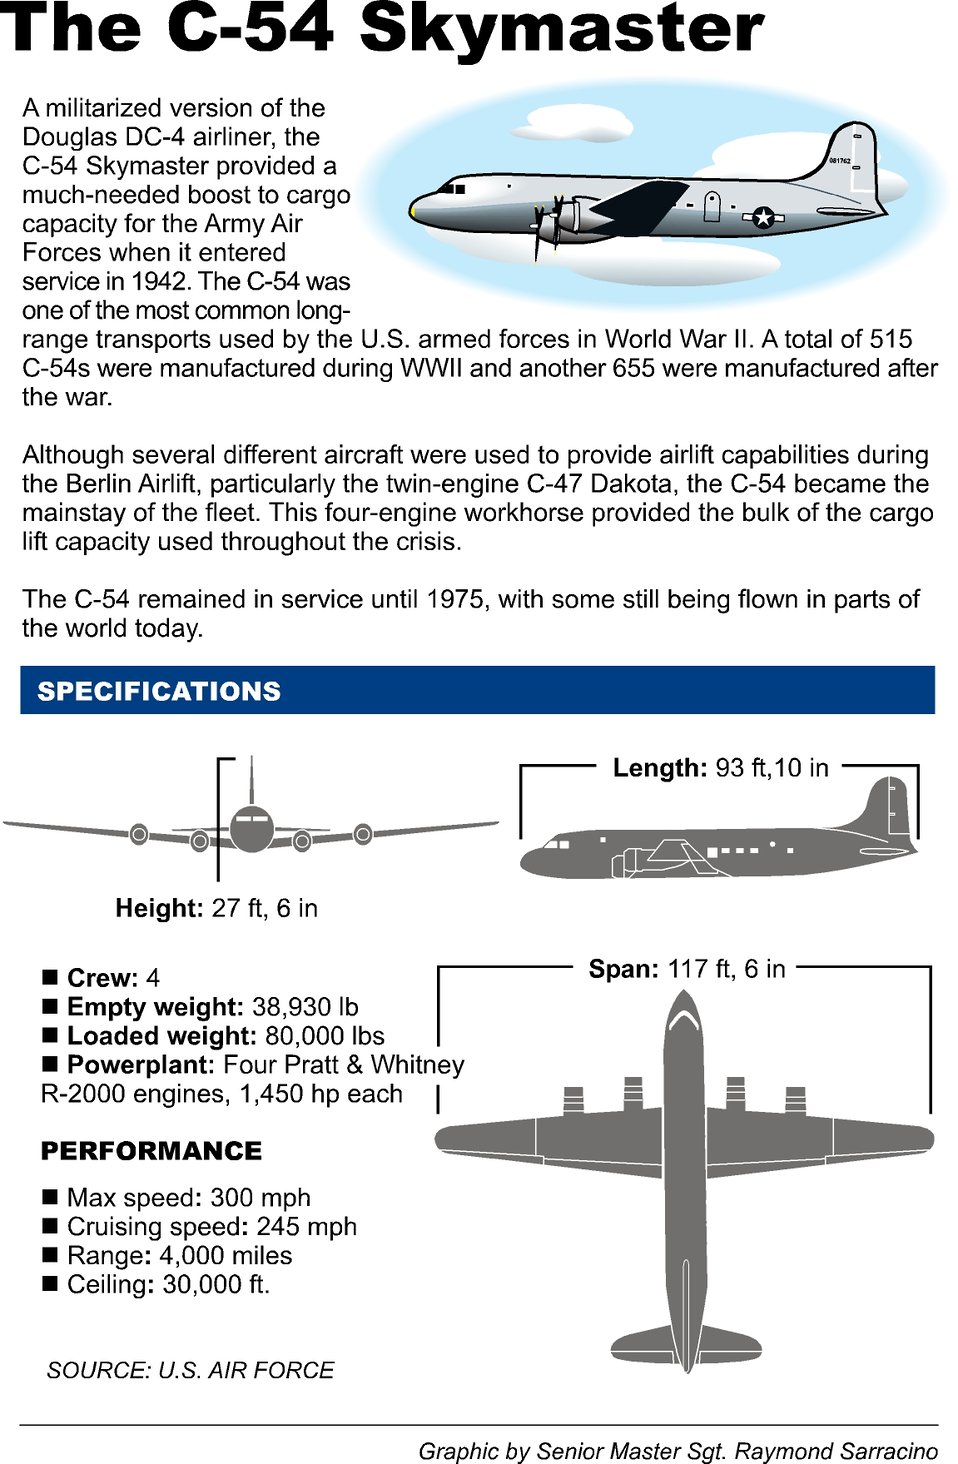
Berlin Airlift vets return to Germany for anniversary

Dub Southers flew 196 missions over Berlin in a C-54 Skymaster during the Berlin Airlift between June 24, 1948 and May 12, 1949.